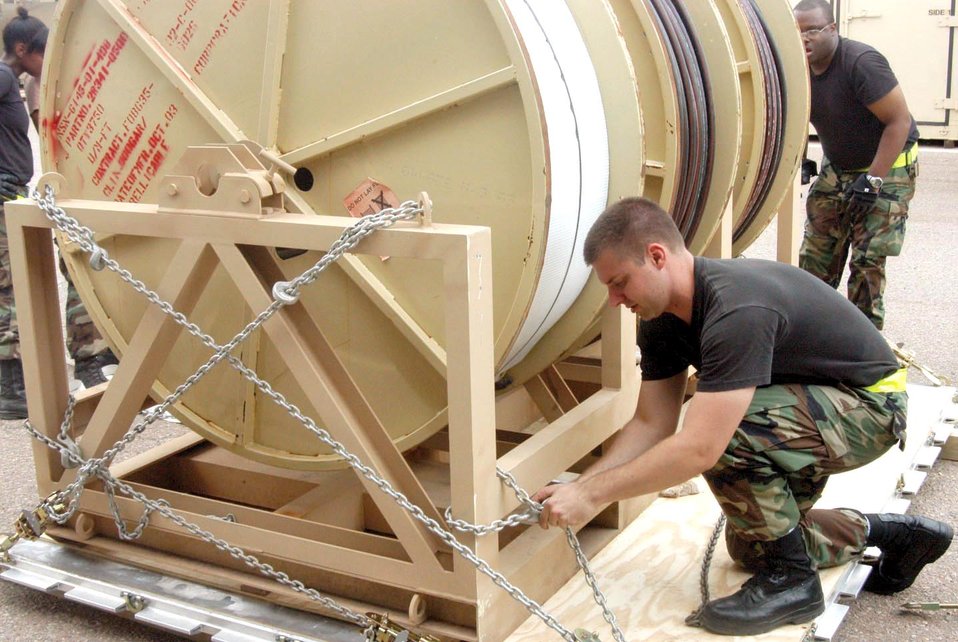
Hurricane relief

HOLLOMAN AIR FORCE BASE, N.M. -- Staff Sgt. Michael Lyons secures electrical cable spools to a pallet before it is loaded on a C-5 Galaxy aircraft here for shipment to the Gulf Coast. Sergeant Lyons is a crew chief with the 8th Aircraft Maintenance Unit.